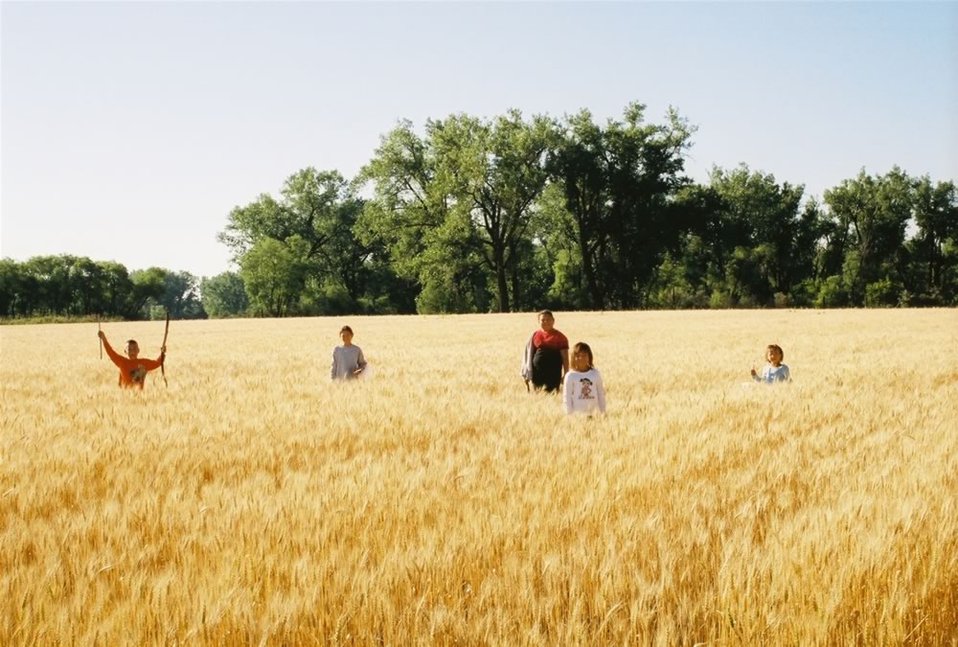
Uploaded by request of Vina Smith

These are my grandchildren & we were just out enjoying nature & picking berries.